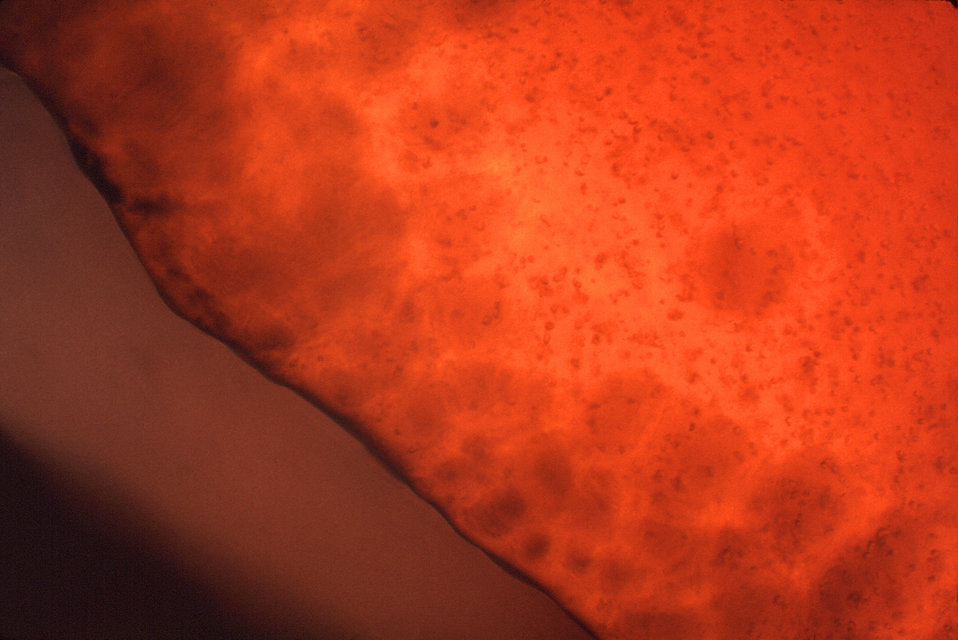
Magnified 100x, this 1977 photograph depicted a Petri dish filled with trypticase soy agar medium containing 5% defibrinated sheep's blood, i.e., blood agar plate (BAP). After having been inoculated, using a stab technique, with alpha-hemolytic Streptococcus anginosus bacteria, i.e., a member of the Gram-positive viridans group of streptococci (VGS), the BAP was incubated in a carbon dioxide enriched atmosphere at 35oC for 24 hours. The culture grew bacterial colonies. In this view, one can see numbers of colonies that were growing at the edge of the stab, surrounded by the characteristic color changes, i.e., a hazy, faded, and indistinct region in which some of the red blood cells (RBCs) were destroyed in the blood agar medium, or "hemolyzed", indicating that these bacteria were indeed alpha-hemolytic in nature.